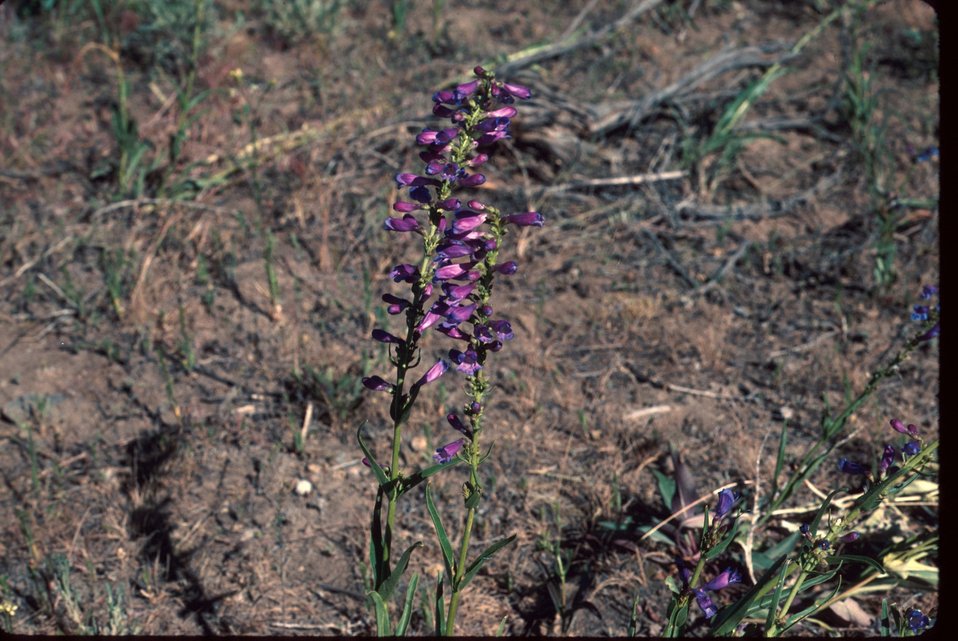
Penstemon perpulcher Minadoka penstemon very beautiful penstemon Wildflower